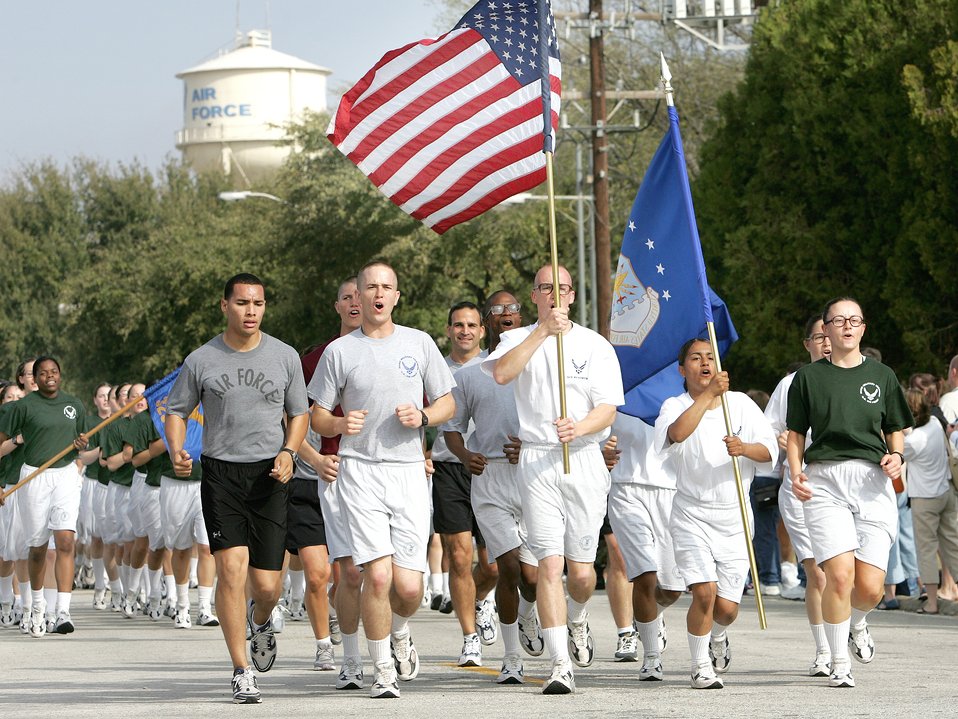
Airman's Run

Airman Basic Zachary Zopp, holding the U.S. flag, and Airman Basic Melissa Nash, carrying the Air Force flag, lead the